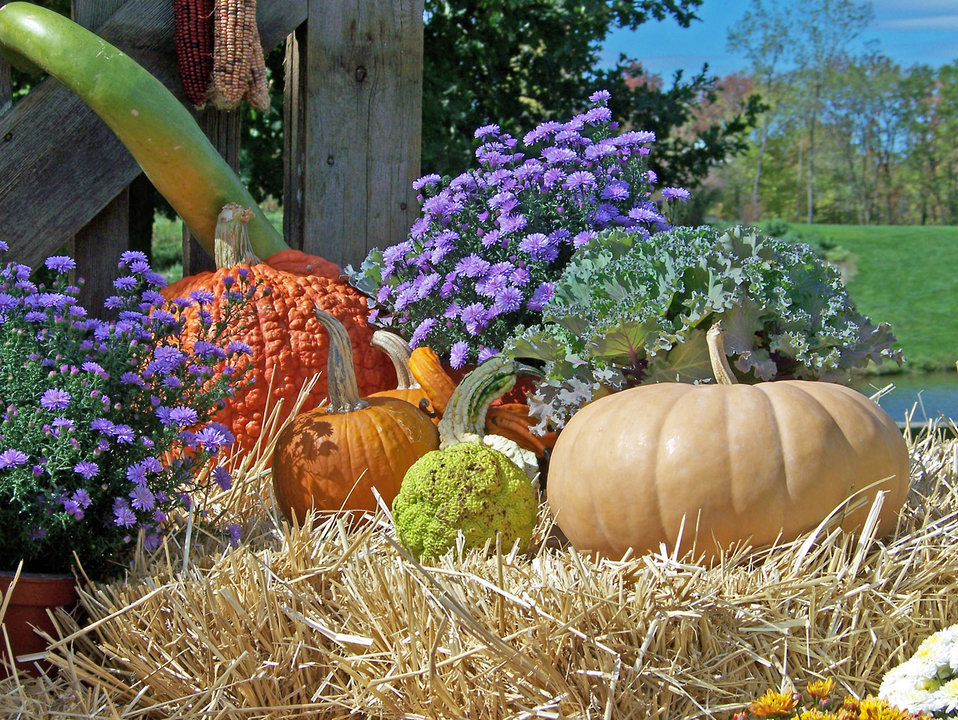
Pumpkins and flowers.